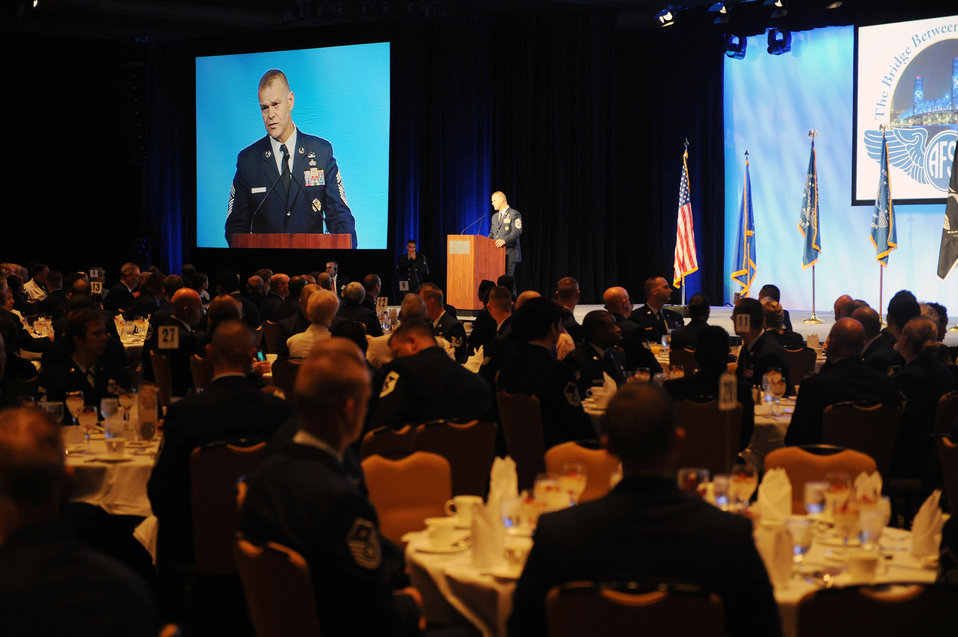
AFSA Convention

Chief Master Sgt. of the Air Force James Roy gives opening remarks at the 2012 Professional Airmen's Conference welcome breakfast in Jacksonville, Fla., Aug. 12, 2012. The Professional Airmen's Conference is the flagship event for the Air Force Sergeants Association and is held annually at a location within the 48 contiguous United States.